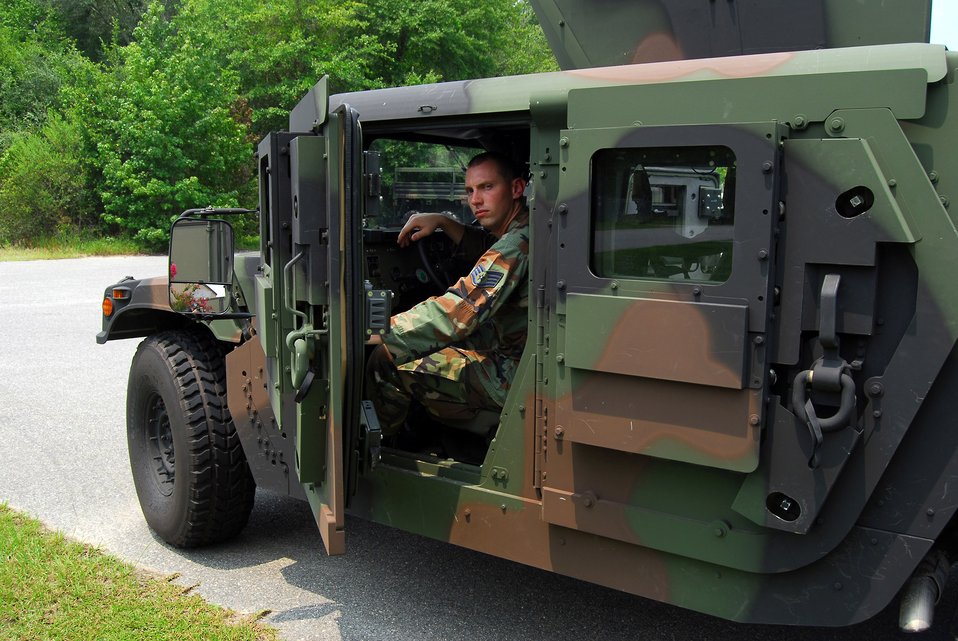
Upgraded armored vehicles aid Moody's war training

Staff Sgt. Tim Bele performs an inspection of one of the 820th Security Forces Group's armored Humvees equipped with Frag 5 armor Aug. 6 at Moody Air Force Base, Ga. The vehicle's 600-pound doors and additional armor plating help protect crews from improvised explosive devices. Sergeant Bele is a vehicle maintenance craftsman.